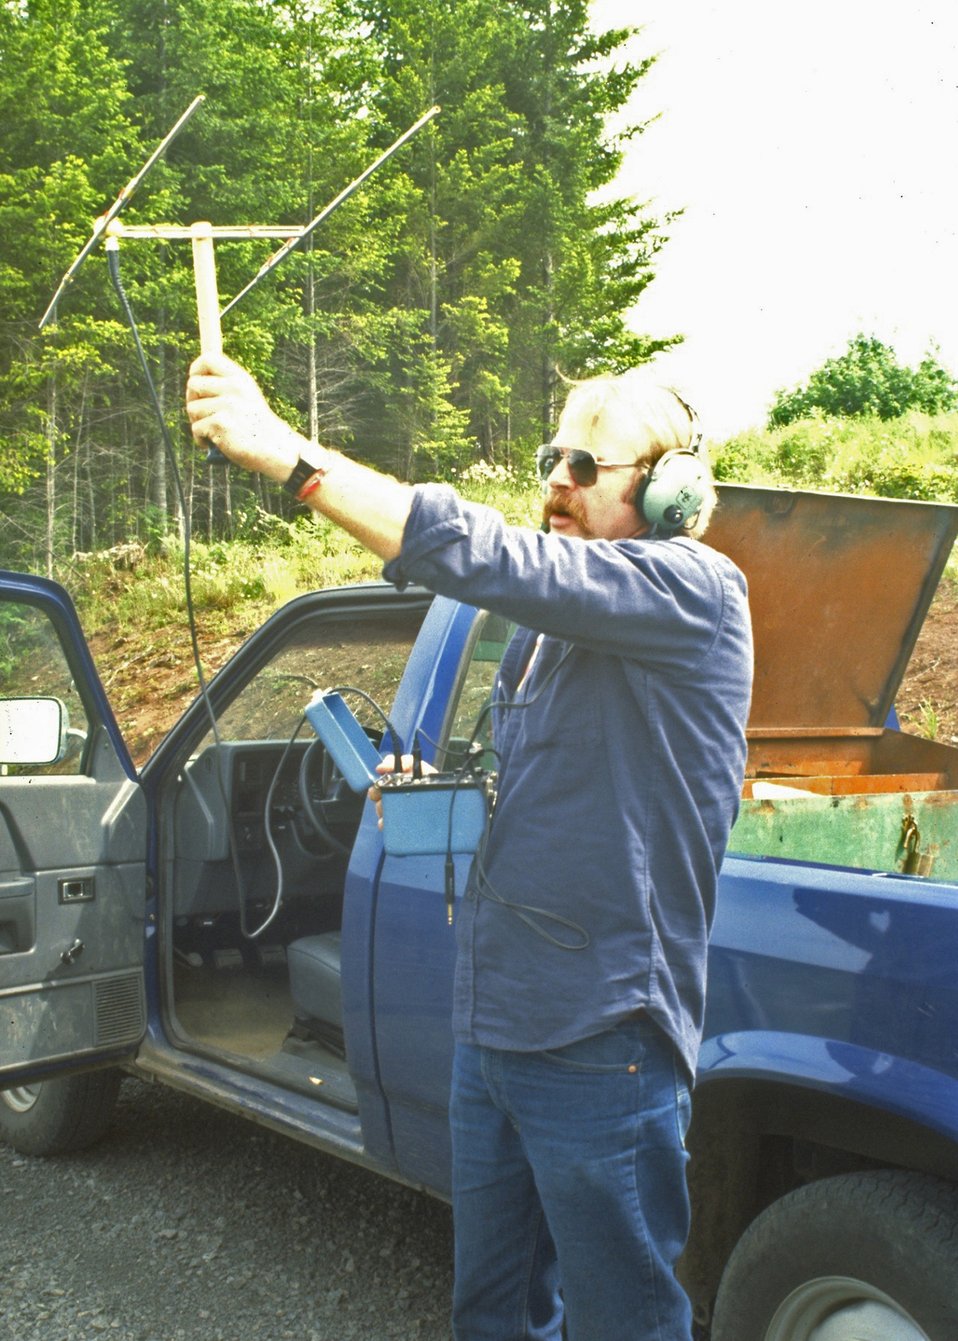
Wildlife biologist tracks owls with a remote tracker/censor.